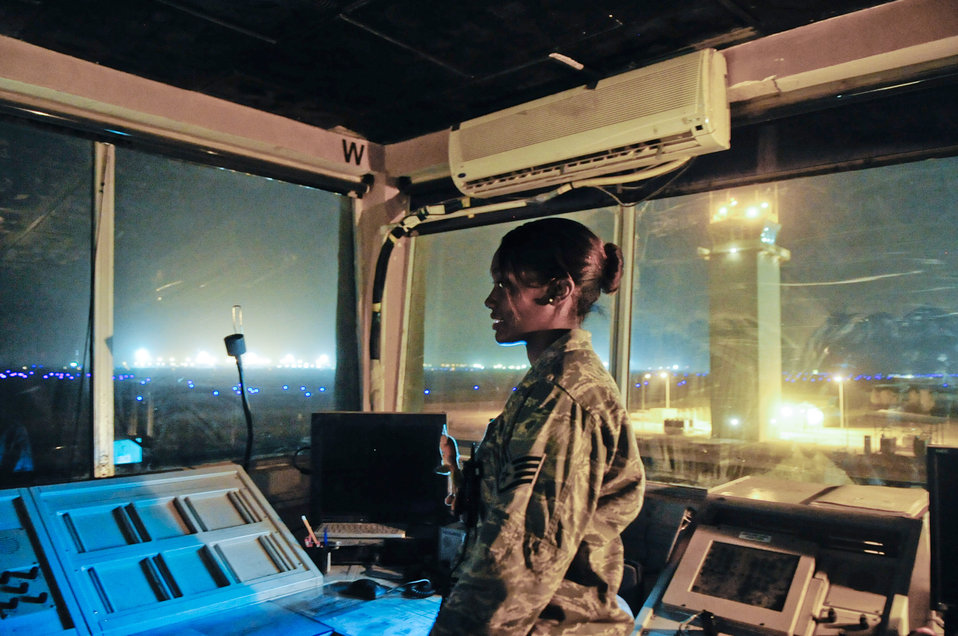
ATC tower opens

Staff Sgt. Madonna Moffatte sends her last transmission from the old tower as the new air traffic control tower in the background becomes operational March 12, 2010, at Ali Base, Iraq. Sergeant Moffatte is an air traffic controller from the 407 Expeditionary Operations Support Squadron, deployed from 35th Operational Support Squadron, Davis Mothen, Ariz.